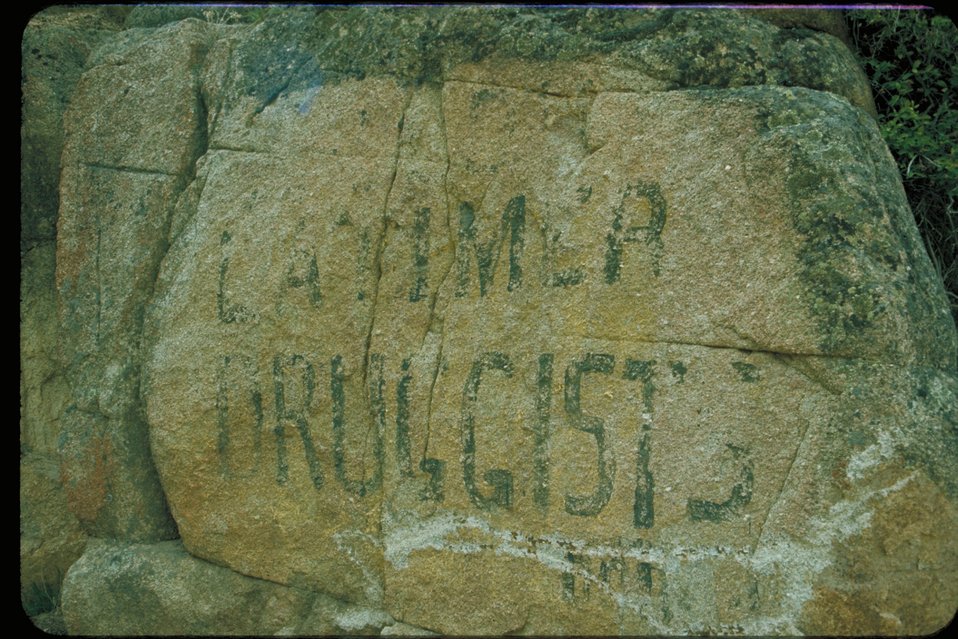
Advertisement on rock Rock Canyon Ballou Latimer Druggists Four Rivers Field Office LSRD Lower Snake River District